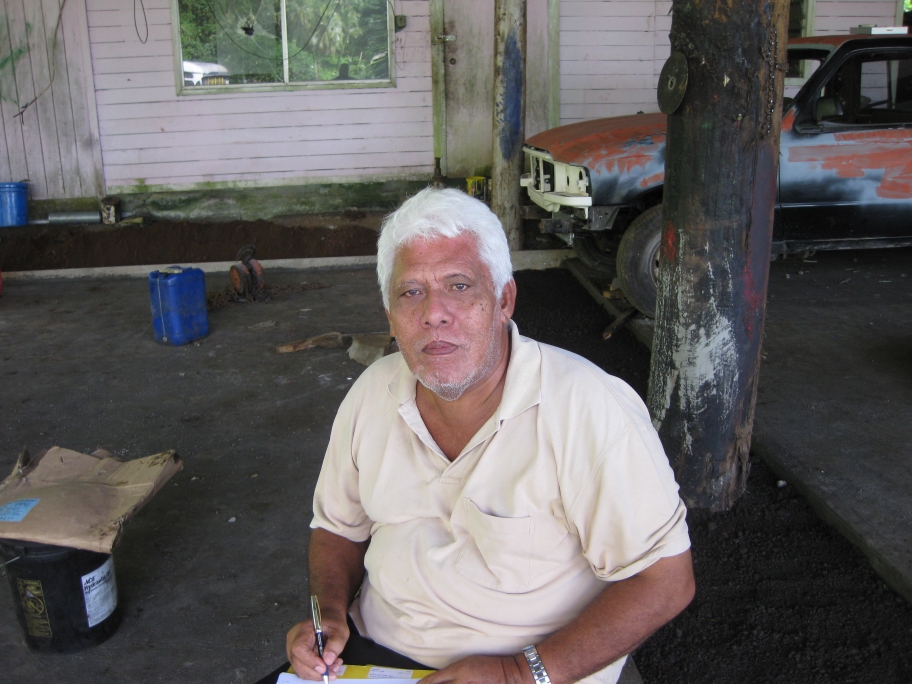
Sosene Asifoa is a small farmer on the island of Tutuila in American Samoa. His operation is highly diversified and includes both crops and animal production. Asifoa’s has received funding from the U.S. Department of Agriculture’s (USDA) Natural Resources Conservation Service (NRCS) to improve conservation practices on his property.